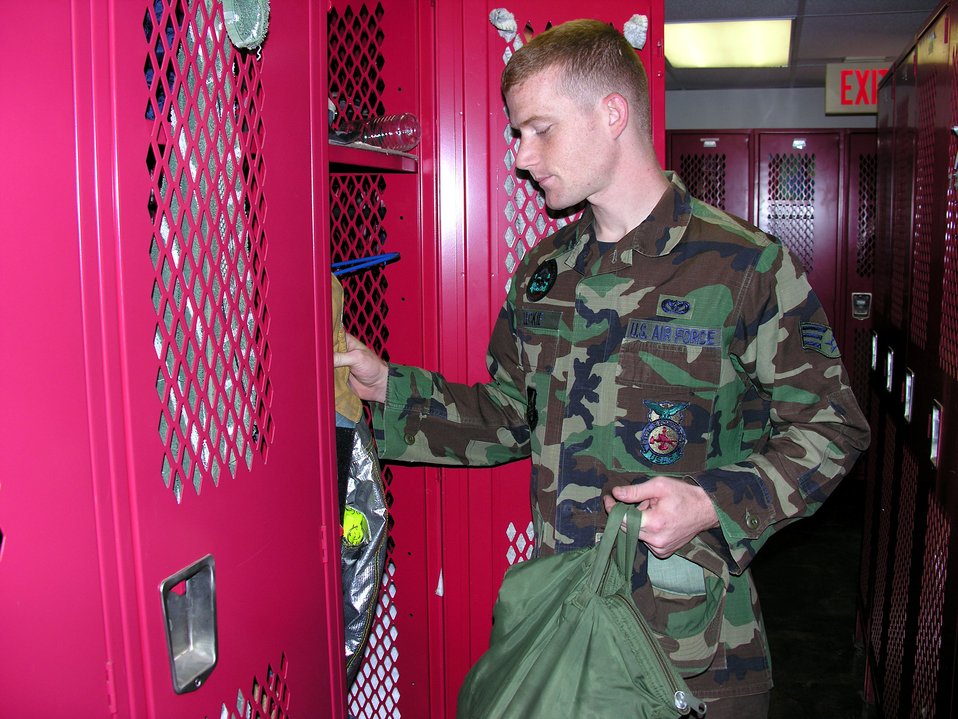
Serving through the season: Senior Airman Alan Leckie

Senior Airman Alan Leckie checks his gear after coming on shift at the fire department at Hickam Air Force Base, Hawaii. Airman Leckie, assigned to the 15th Civil Engineer Squadron, will work on Christmas Day to ensure the base is safe.